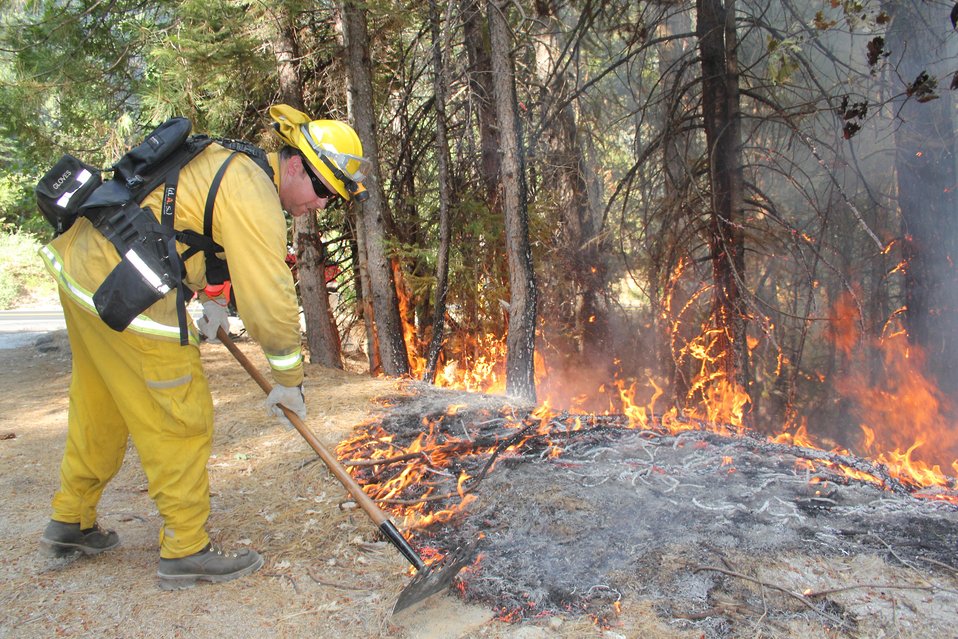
Firefighter works on hotspots along Highway 120 at the Rim Fire. The Rim Fire in the Stanislaus National Forest near in California began on Aug. 17, 2013 and is under investigation. The fire has consumed approximately 192,737 acres and is 30% contained.